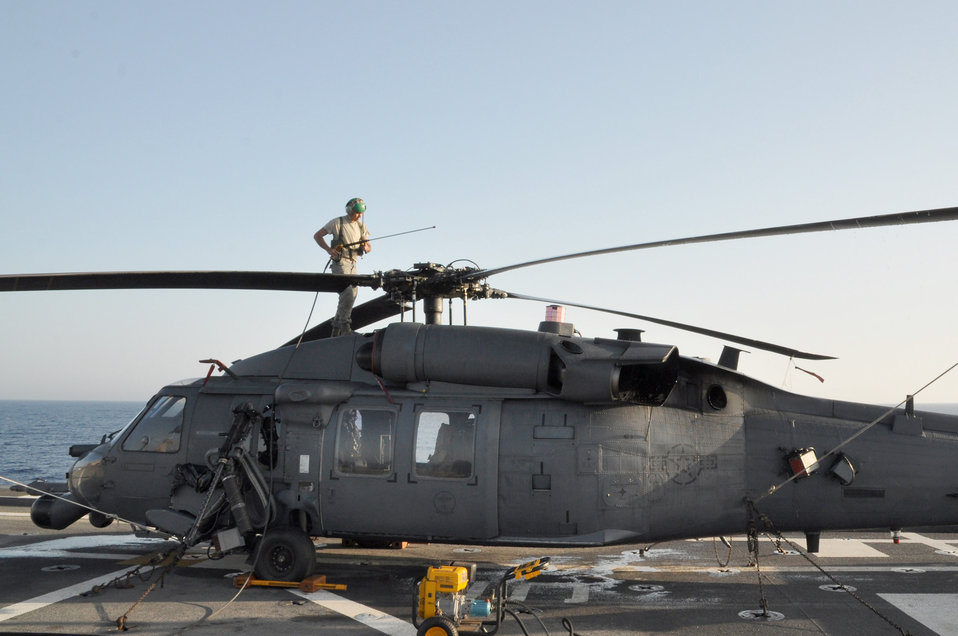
Air Force on Deck!

110327-N-7293M-186 MEDITERRANEAN SEA (Mar. 27, 2011) U.S. Air Force Staff Sgt. Garrett Fillingham prepares to wash down the main rotors an HH-60G Pave Hawk helicopter from the 56th Rescue Squadron embarked aboard amphibious transport dock USS Ponce (LPD 15). Based out of RAF Lakenheath, England, a detachment from the 56th is aboard Ponce in order to provide combat search and rescue support for coalition forces flying in support of Operation Odyssey Dawn, the coalition effort to bring humanitarian relief to the Libyan people. Due to the saltwater environment at sea, the 56th Airmen have to clean their aircraft far more frequently in order to prevent salt corrosion from damaging vital components. Ponce is part of Kearsarge Amphibious Ready Group, supporting maritime security operations and theater security cooperation efforts in the U.S. 6th Fleet area of responsibility.